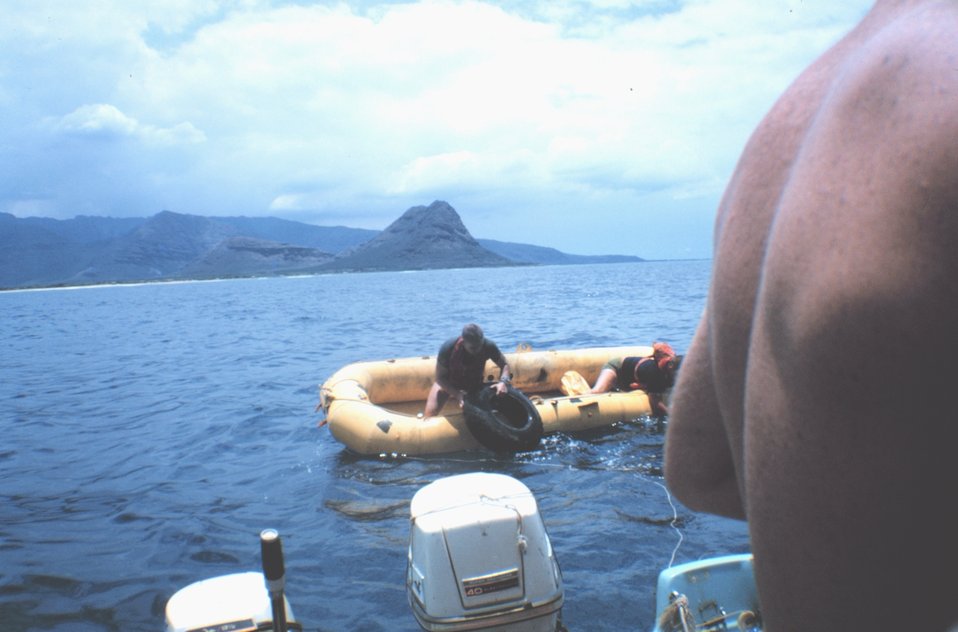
Navy divers assisting in the placement of used tires as an alternate reef material on the artificial reef site at Pokai Bay, Oahu. The tires did not stay in place because of the strong surge of the large Pacific swells at the site.